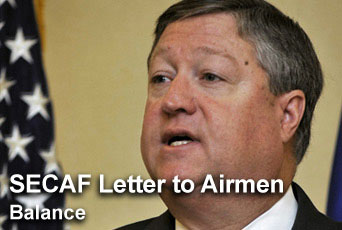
'Letter to Airmen

In his latest Letter to Airmen, Secretary of the Air Force Michael B. Donley discusses creating balance across the Air Force.